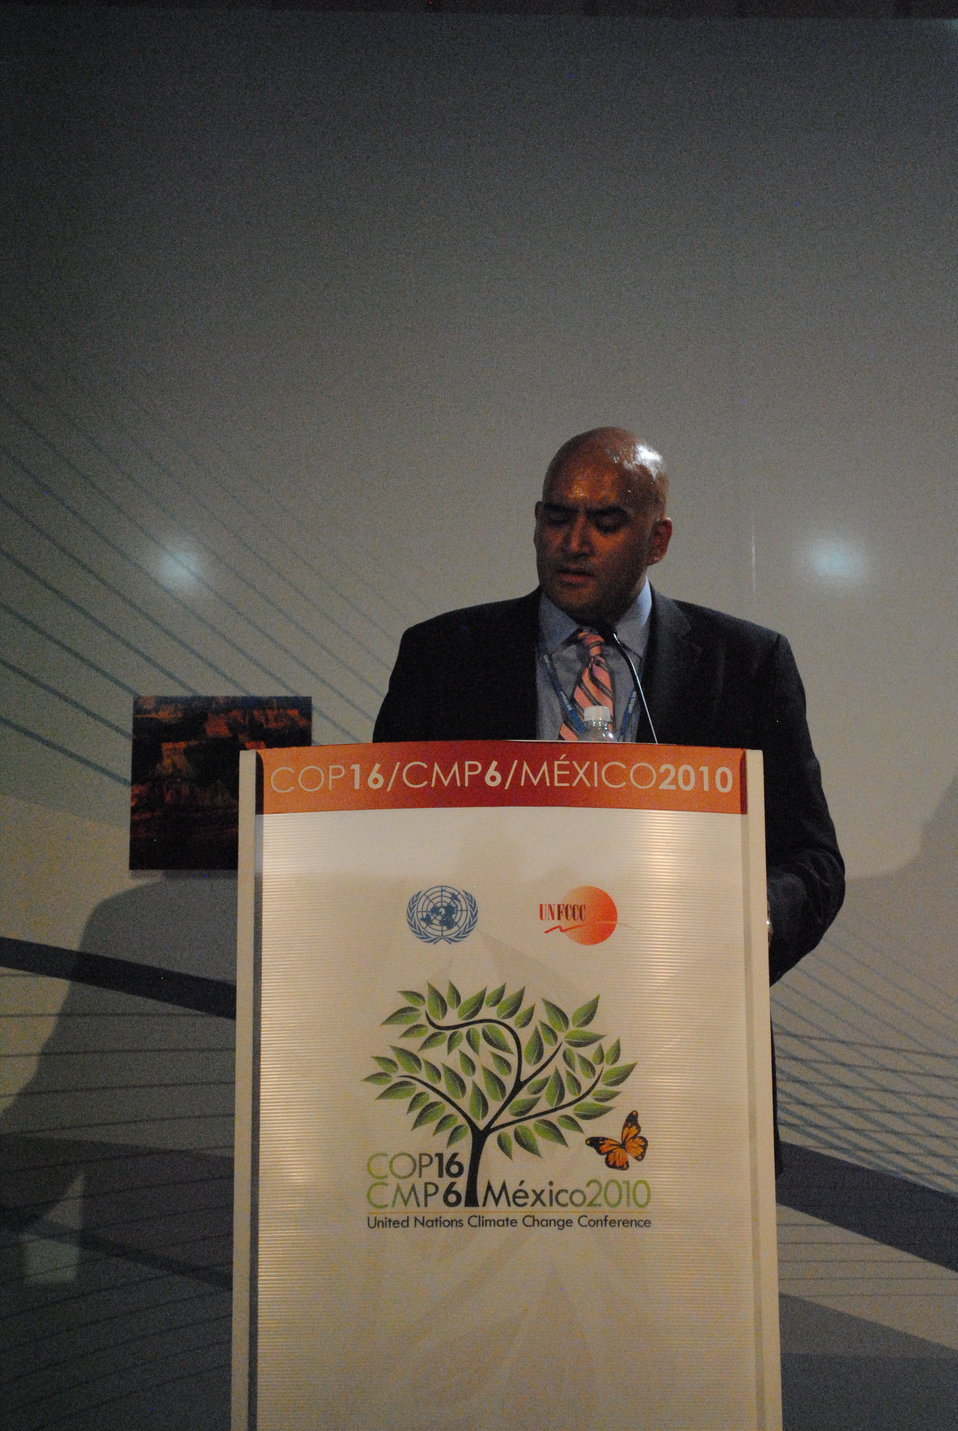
U.S. Department of Transportation's Shailen Bhatt Presents “Livability”

Shailen Bhatt of the U.S. Department of Transportation presents the side event, “Livability,” at the U.S. Center at COP-16 in Cancun, Mexico, on December 1, 2010.